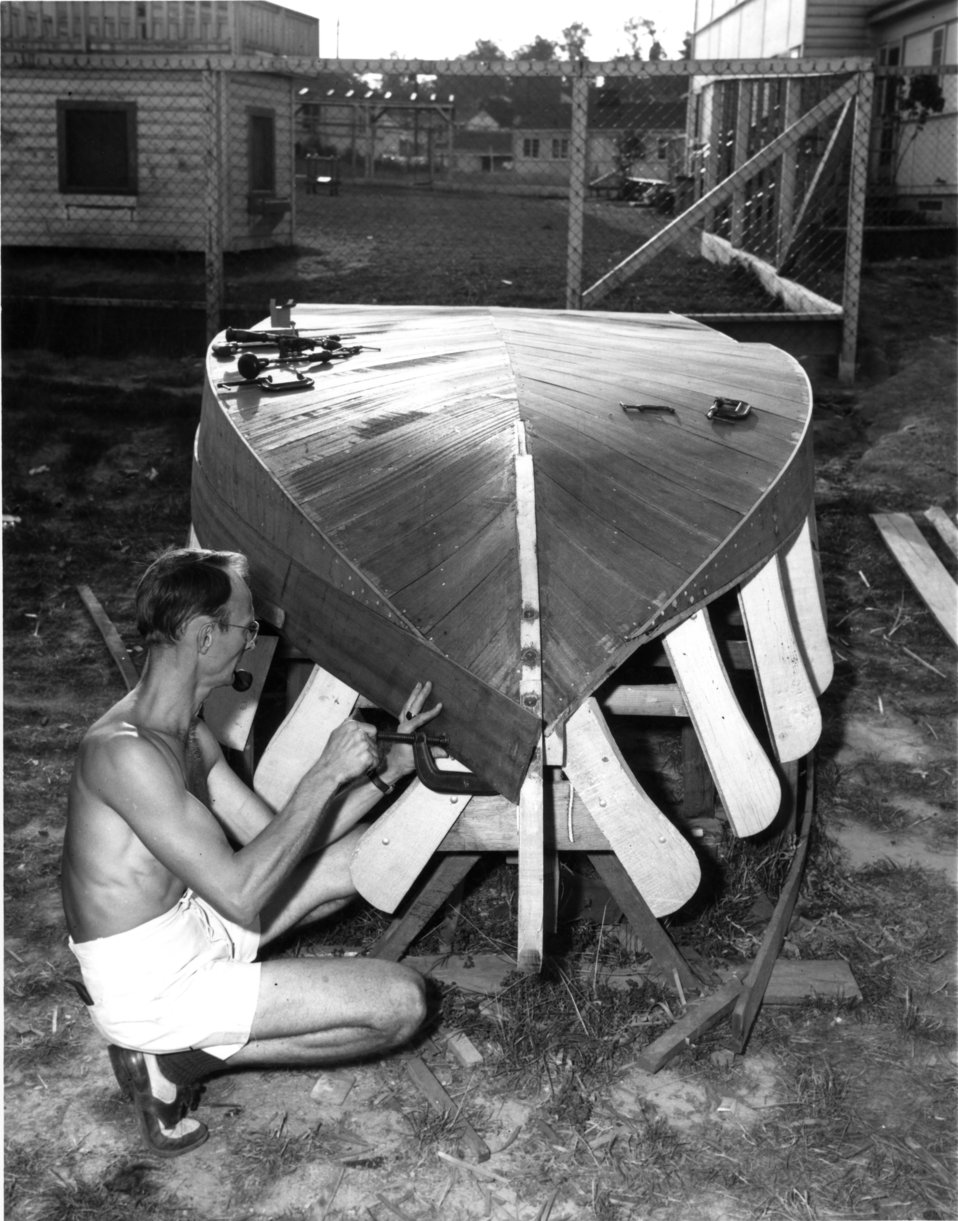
Recreation at Oak Ridge